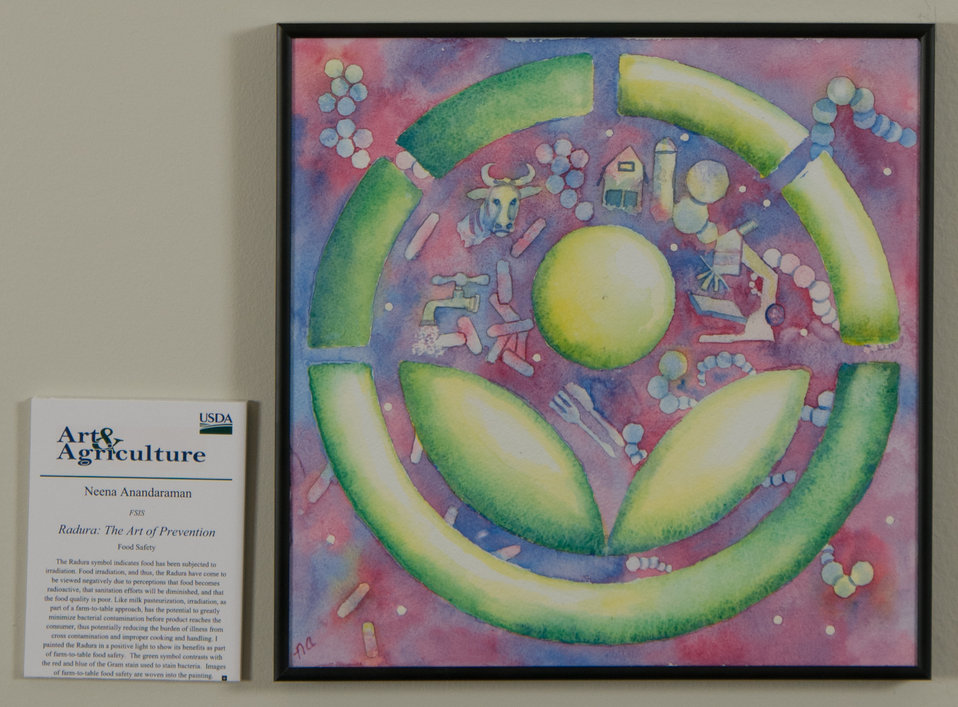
Online Viewer's Choice entries of the 2013 Art & Agriculture, Tuesday, July 9, 2013, in the South Building, Washington, D.C. Themes were expressed by employees from across the department and the contest was open to full-time and part-time USDA employees. Winning artwork will be displayed till the end of the year. U.S. Artistic expression is a creative outlet that is vital for an individual to grow and develop.